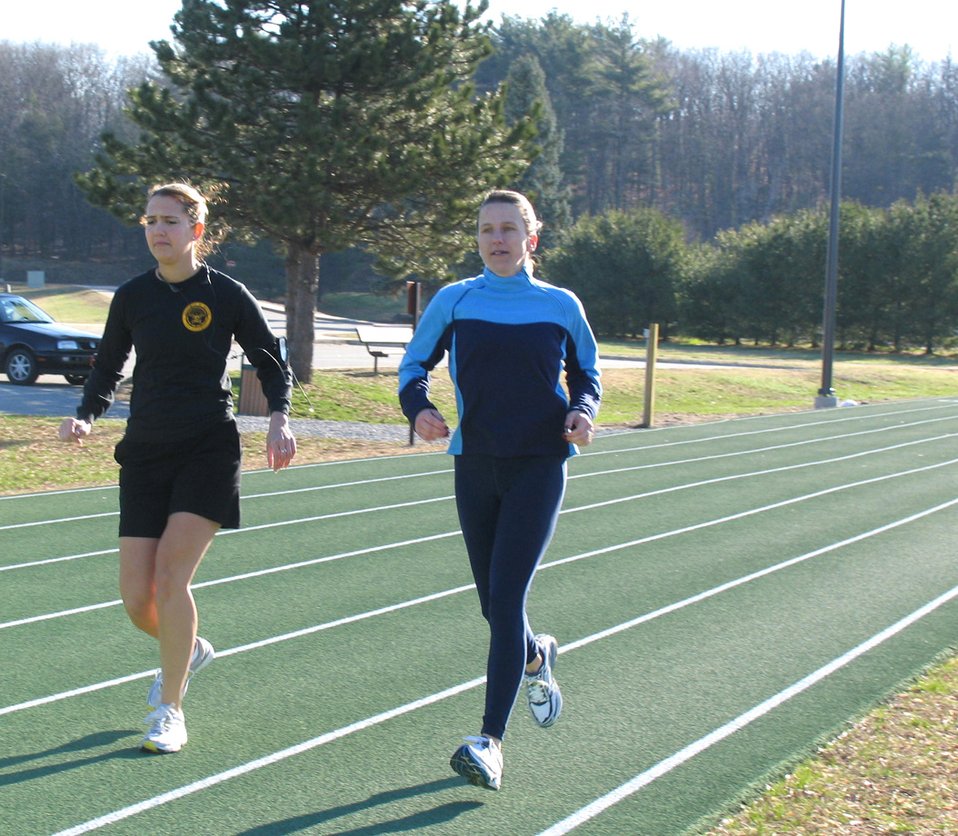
Marathon runners conquer Boston, Heartbreak Hill

Second Lt. Ana Huffstetler (left) and Capt. Sabine Peters tune up their strides on the track at Hanscom Air Force Base, Mass., in preparation for the Boston Marathon April 17. Lieutenant Huffstetler is assigned to the 951st Electronic Systems Group and Captain Peters is assigned to the Electronic Systems Center.